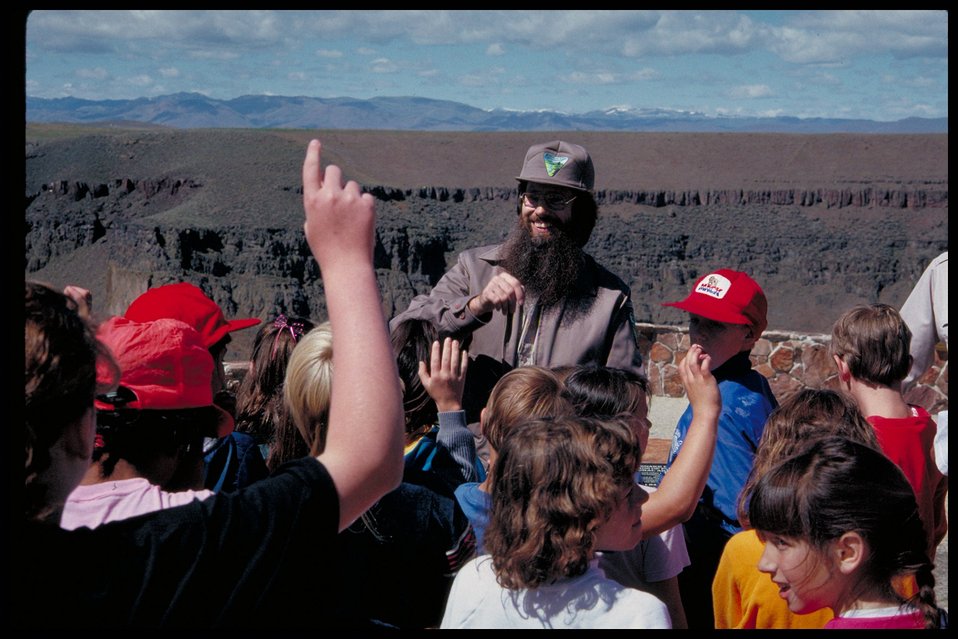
Education Birds of Prey National Conservation Area BOP Owyhee Field Office LSRD Lower Snake River District